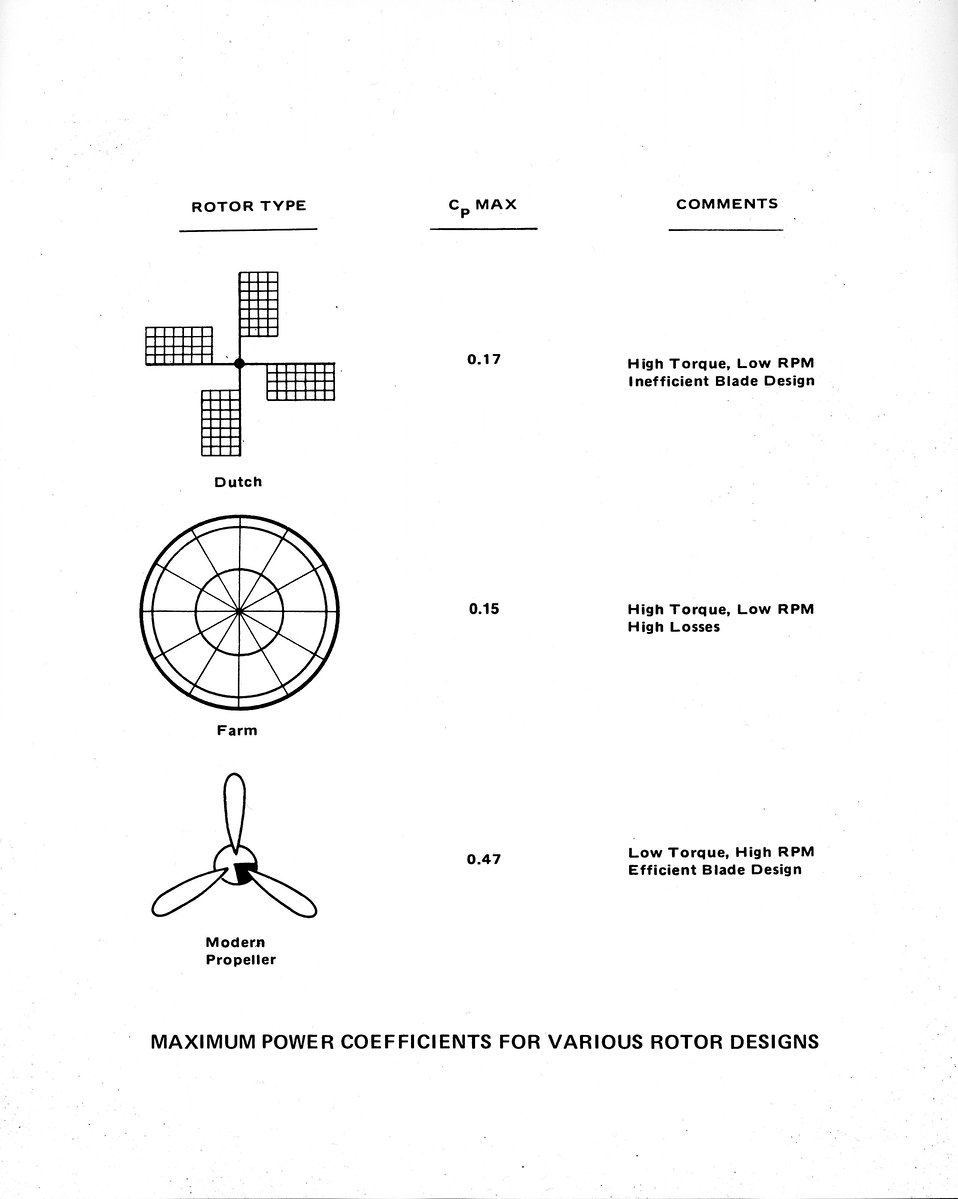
The power in the wind must be captured by wind machines and converted to electricity to help solve the Nation's energy supply problems. c. 1977